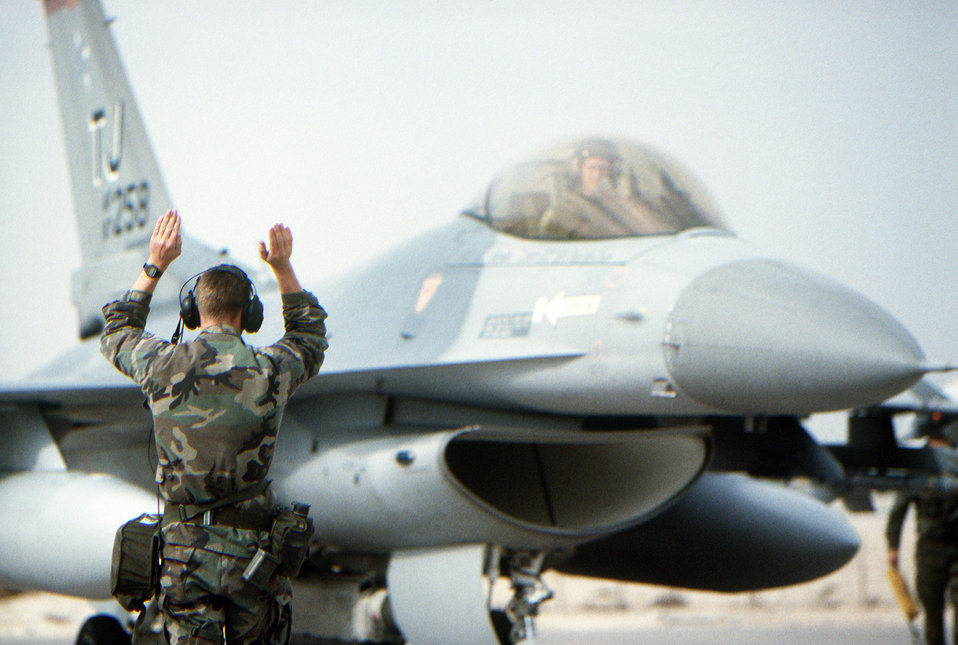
F-16C Fighting Falcon gets signal for takeoff

1990's -- A ground crew member signals to the pilot of a 614th Tactical Fighter Squadron F-16C Fighting Falcon aircraft as it prepares to takeoff on the first daylight strike against Iraqi targets during Operation Desert Storm.